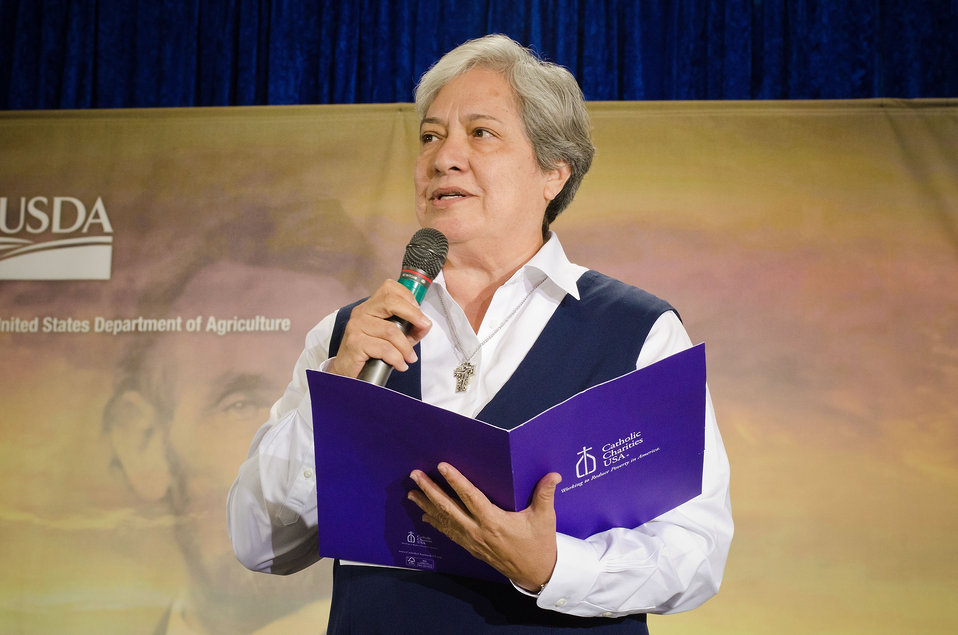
Sister Norma Pimentel Catholic Charities of the Rio Grande Valley in the Diocese of Brownsville, TX gives the invocation at the opening of the United States Department of Agriculture's 150th Anniversary celebration in Washington, D.C., on Tuesday, May 15, 2012.